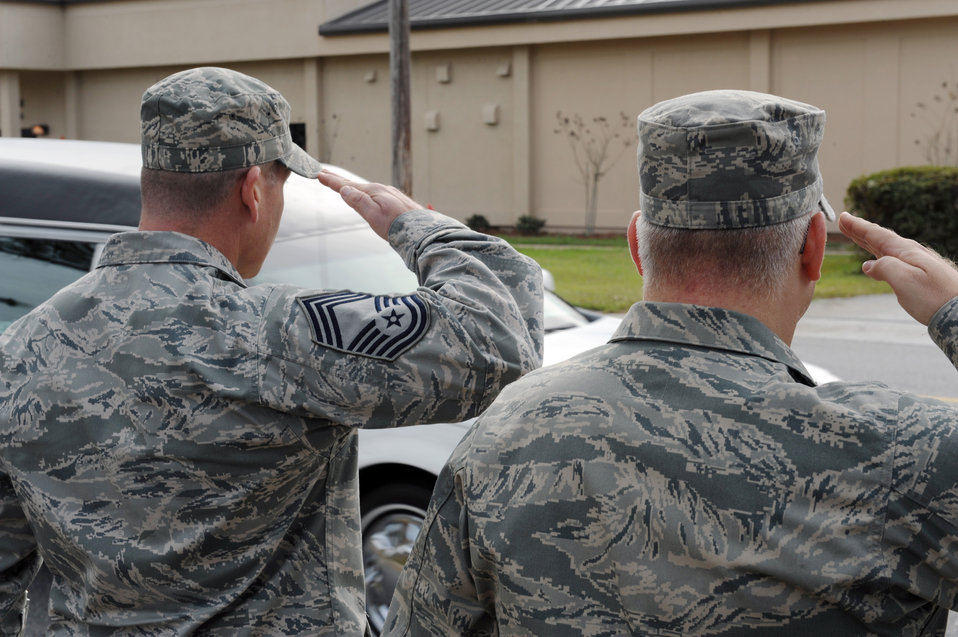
Moody community pay respect to fallen warrior

Airmen from the 23rd Wing salute as a hearse travels down Robbins Road Dec. 3, 2009, at Moody Air Force Base, Ga. The hearse carried Army Staff Sgt Briand Williams, a fallen Soldier who was stationed at Fort Benning, Ga.